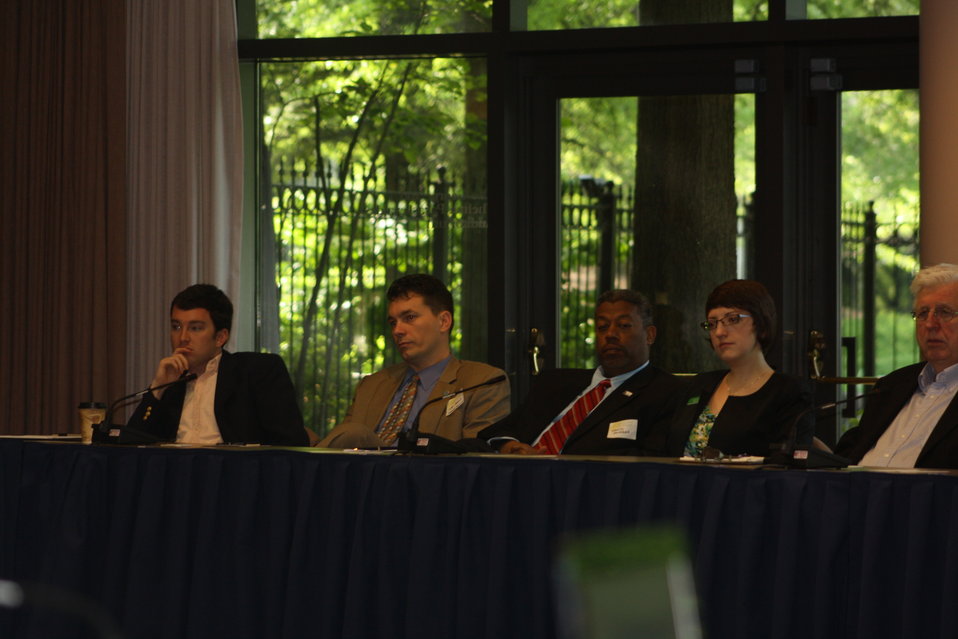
Faith-Based and Neighborhood Partnership launch at Atlanta's Carter Center